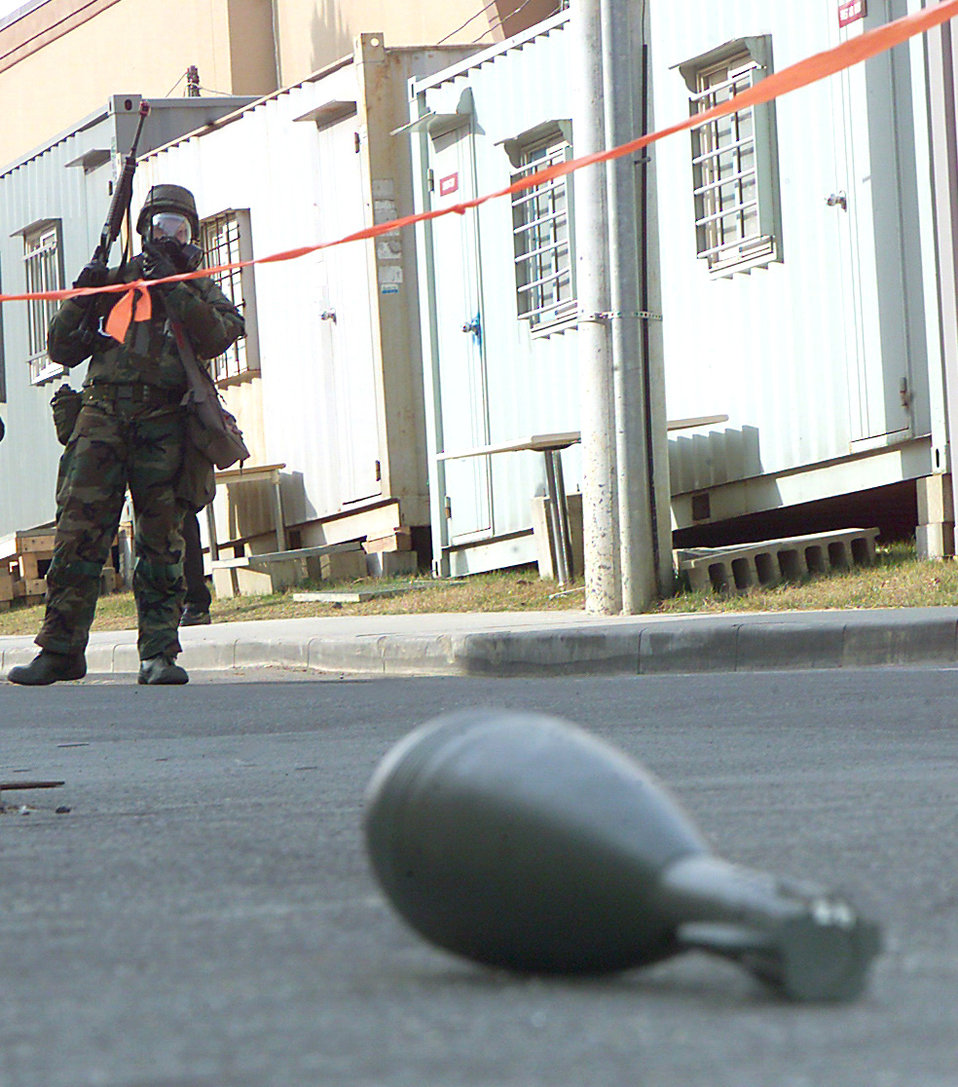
Stay away

OSAN AIR BASE, South Korea -- Airman 1st Class Nathanael Norman guards the area near an unexploded ordnance during an exercise here Dec. 14. Airman Norman is assigned to the 51st Communications Squadron.